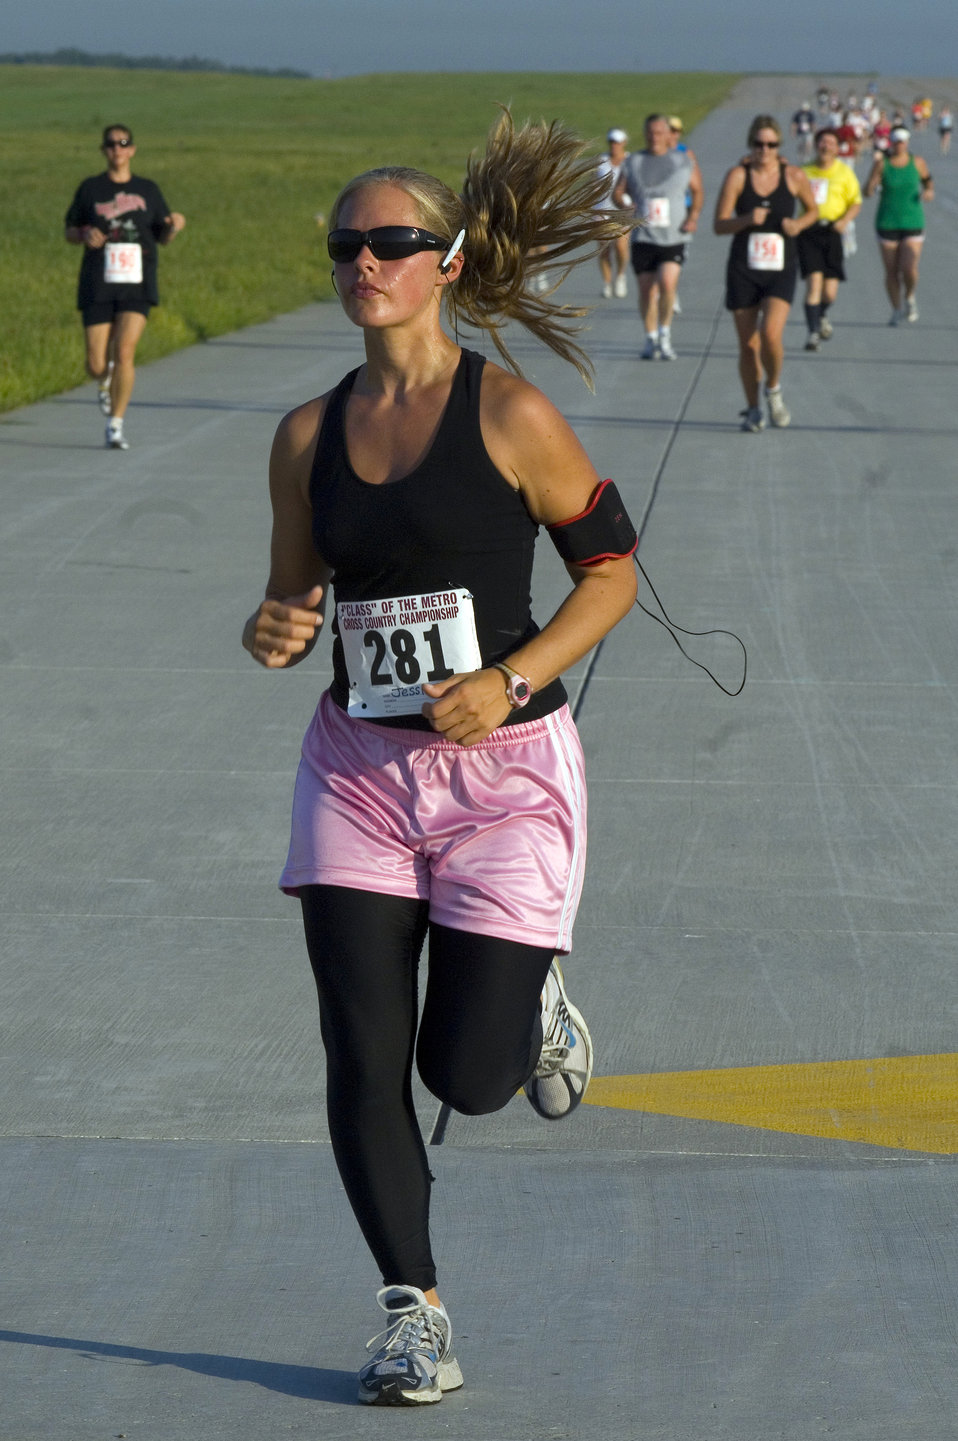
Runners get fit to fight during Air Force Week in the Heartland

Jessica Kahnk makes her way across the three-mile marker of the seven-mile Bellevue/Offutt Runway Run Aug. 10 during Air Force Week in the Heartland supported by Offutt Air Force Base, Neb. The week is designed to broaden awareness of the Air Force's role in the war on terrorism and strengthen support for Airmen serving worldwide in defense of freedom. Ms. Kahnk is a teacher at McMillan Middle School in Omaha, Neb., and is scheduled to attend the Air Force Officer Training School in June.